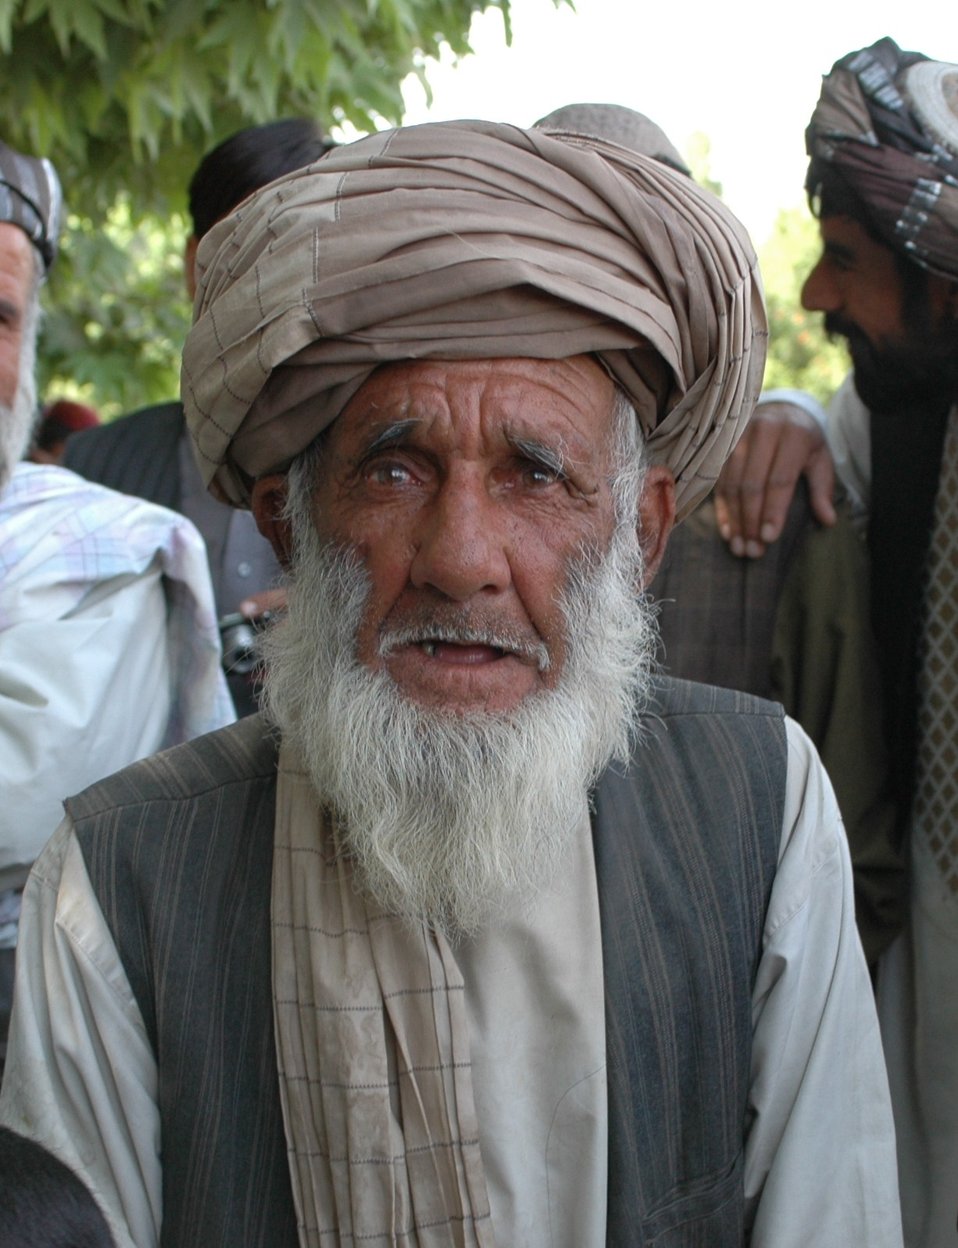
Dr Shah Visits Argandab April 10, 2010